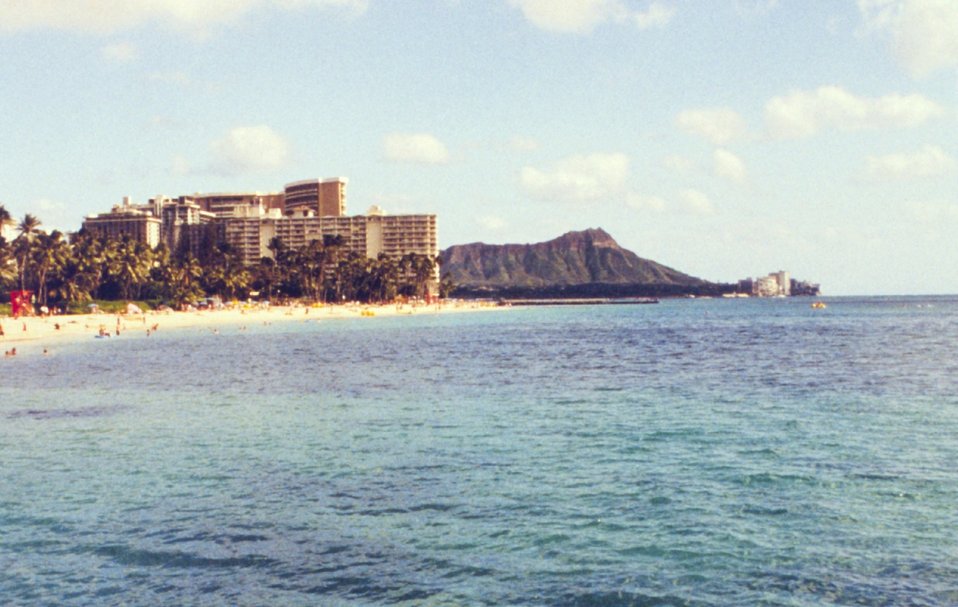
Waikiki and Diamondhead from a kayak offshore.